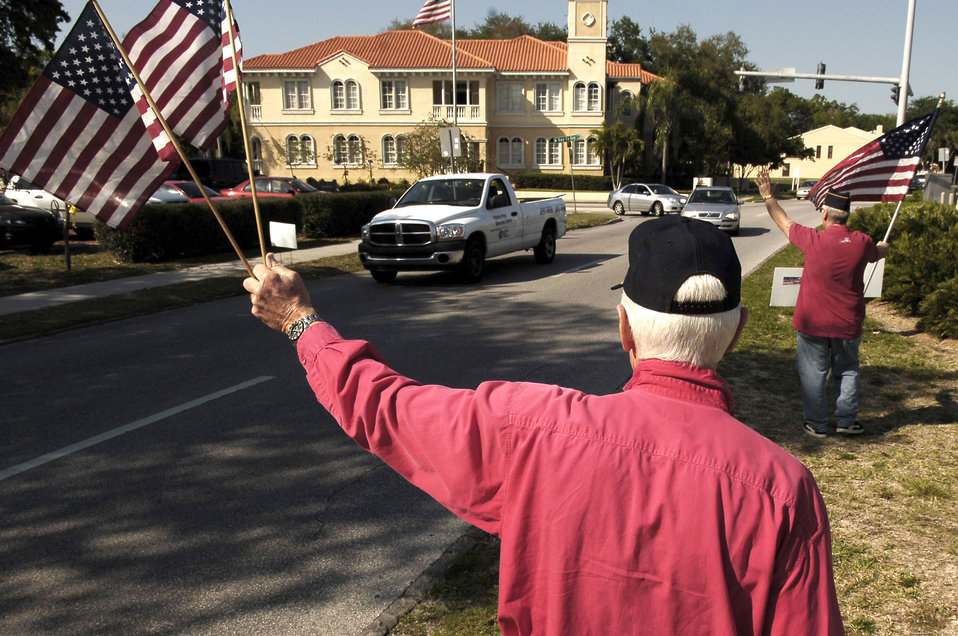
Patriots show their support

Retired Navy Rear Adm. Leroy Collins Jr. waves to military members March 21 at MacDill Air Force Base, Fla. Admiral Collins is a member of the Bayshore Patriots in Tampa. The patriots show their support to military members and their families by waving the American flag on one of the busy roads in Tampa. They consist of retired military and civilian members of the community.